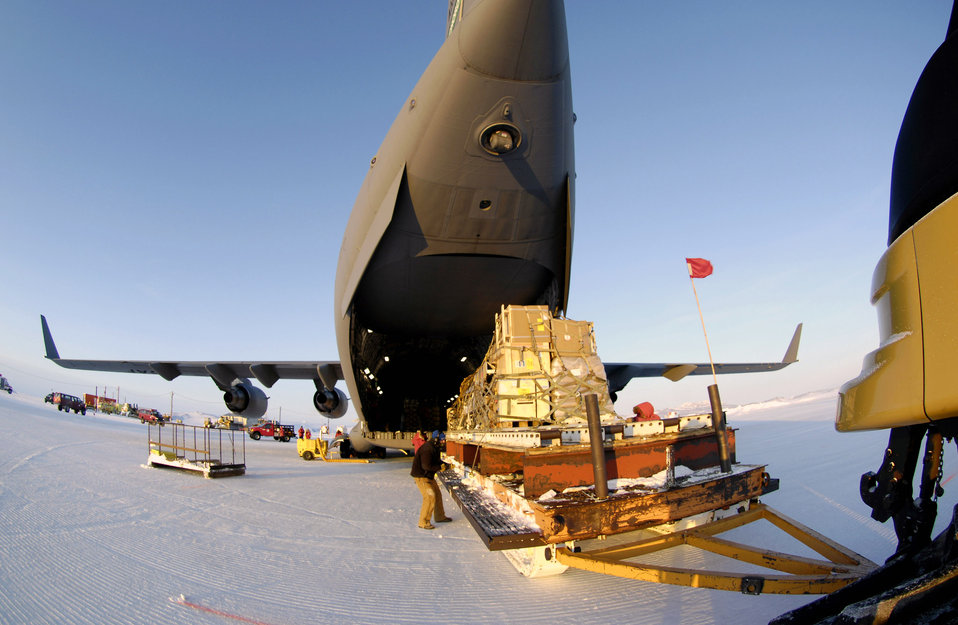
Winter flights to Antarctica wrap up

A pallet sled is used to unload cargo from a C-17 Globemaster III during an Operation Deep Freeze winter fly-in mission Aug. 25 at Pegasus White Ice Runway, Antarctica. A C-17 and 31 Airmen from McChord Air Force Base, Wash., conducted the annual winter fly-in augmentation of scientists, support staff, food and equipment for the U.S. Antarctic Program at McMurdo Station, Antarctica.